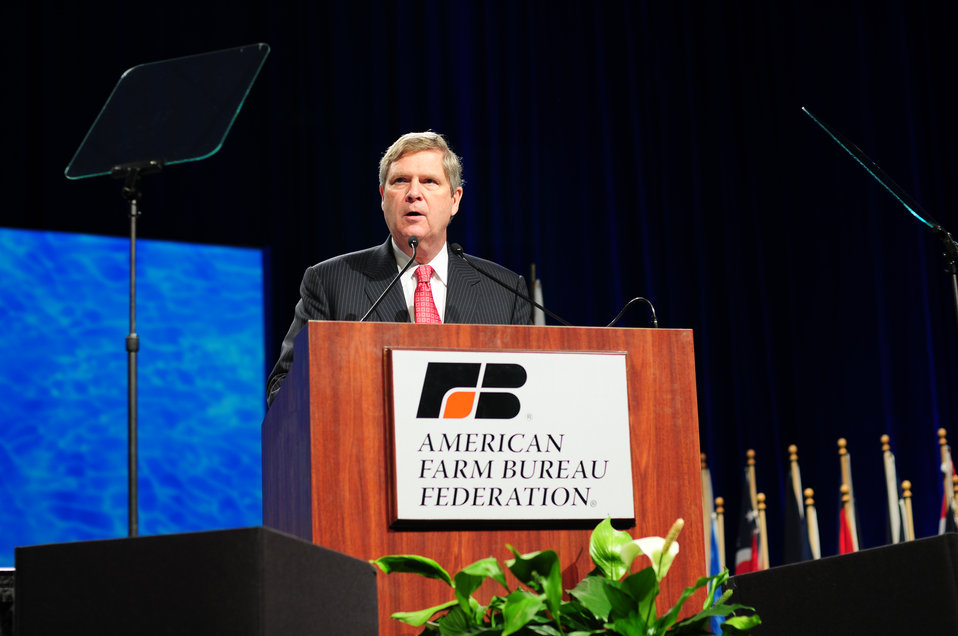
Agriculture Secretary Tom Vilsack speaks at the American Farm Bureau Annual Meeting Closing Ceremony at the Convention Center in Waikiki, Hawaii, on Sunday, January 9, 2012.